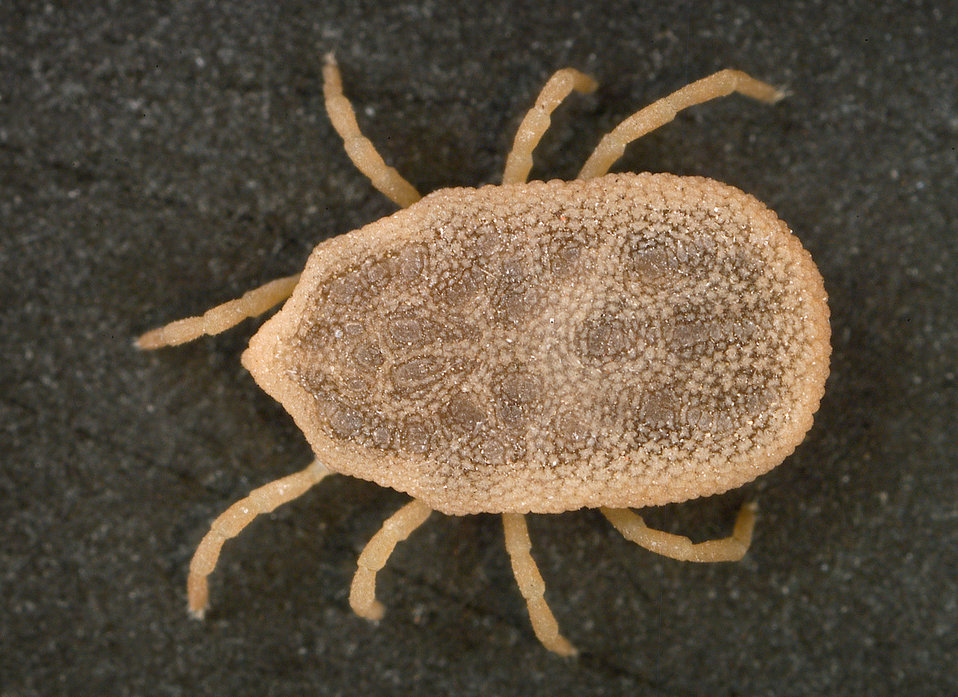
This is a dorsal view of the 'soft tick' Carios kelleyi, formerly Ornithodoros kelleyi, or the 'Bat Tick'.